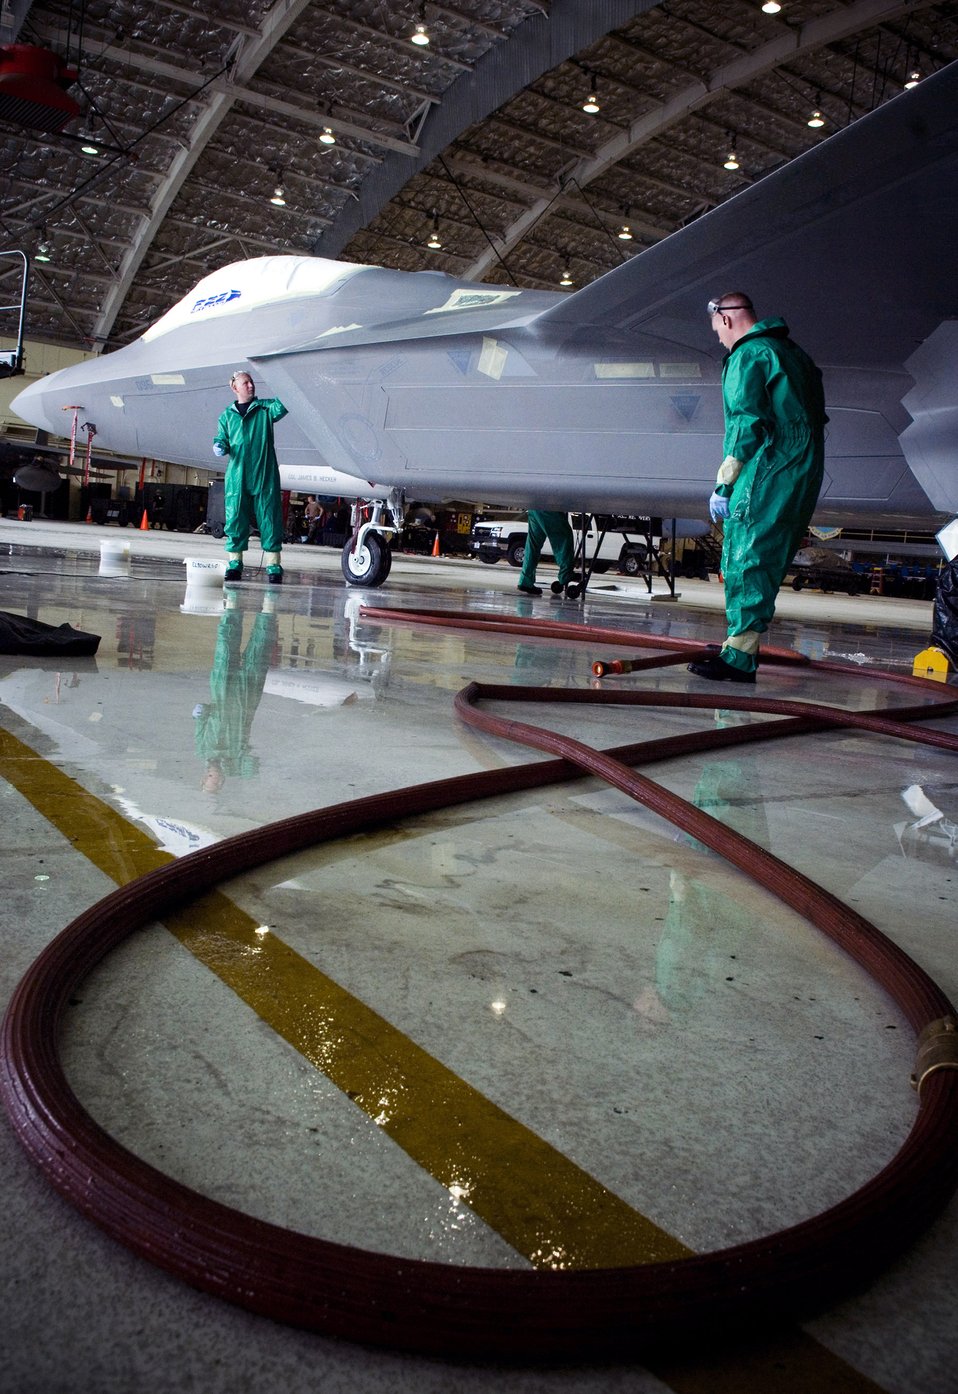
Bathtime for Raptors

Senior Airmen Michael Doane and Derrik Gildea wash an F-22 Raptor from the 90th Fighter Squadron Aug. 14 at Elmendorf Air Force Base, Alaska. They washed the aircraft for the first time Aug. 14 since the aircraft arrived Aug. 8. The Airmen are assigned to the 3rd Aircraft Maintenance Squadron.